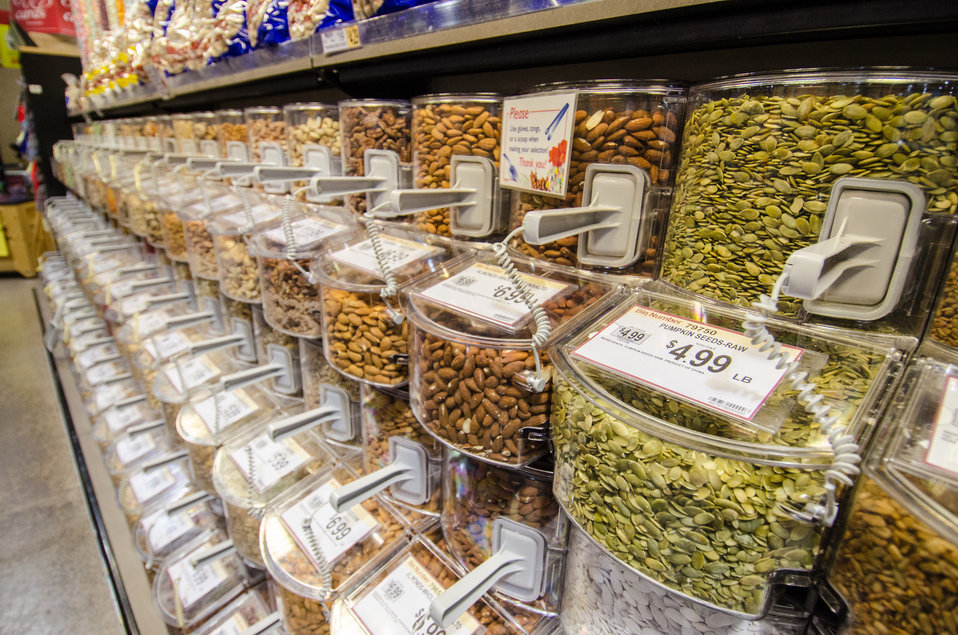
Nuts and dried produce, in self-serve bins, at a grocery store in Fairfax, Virginia, on March 3, 2011.